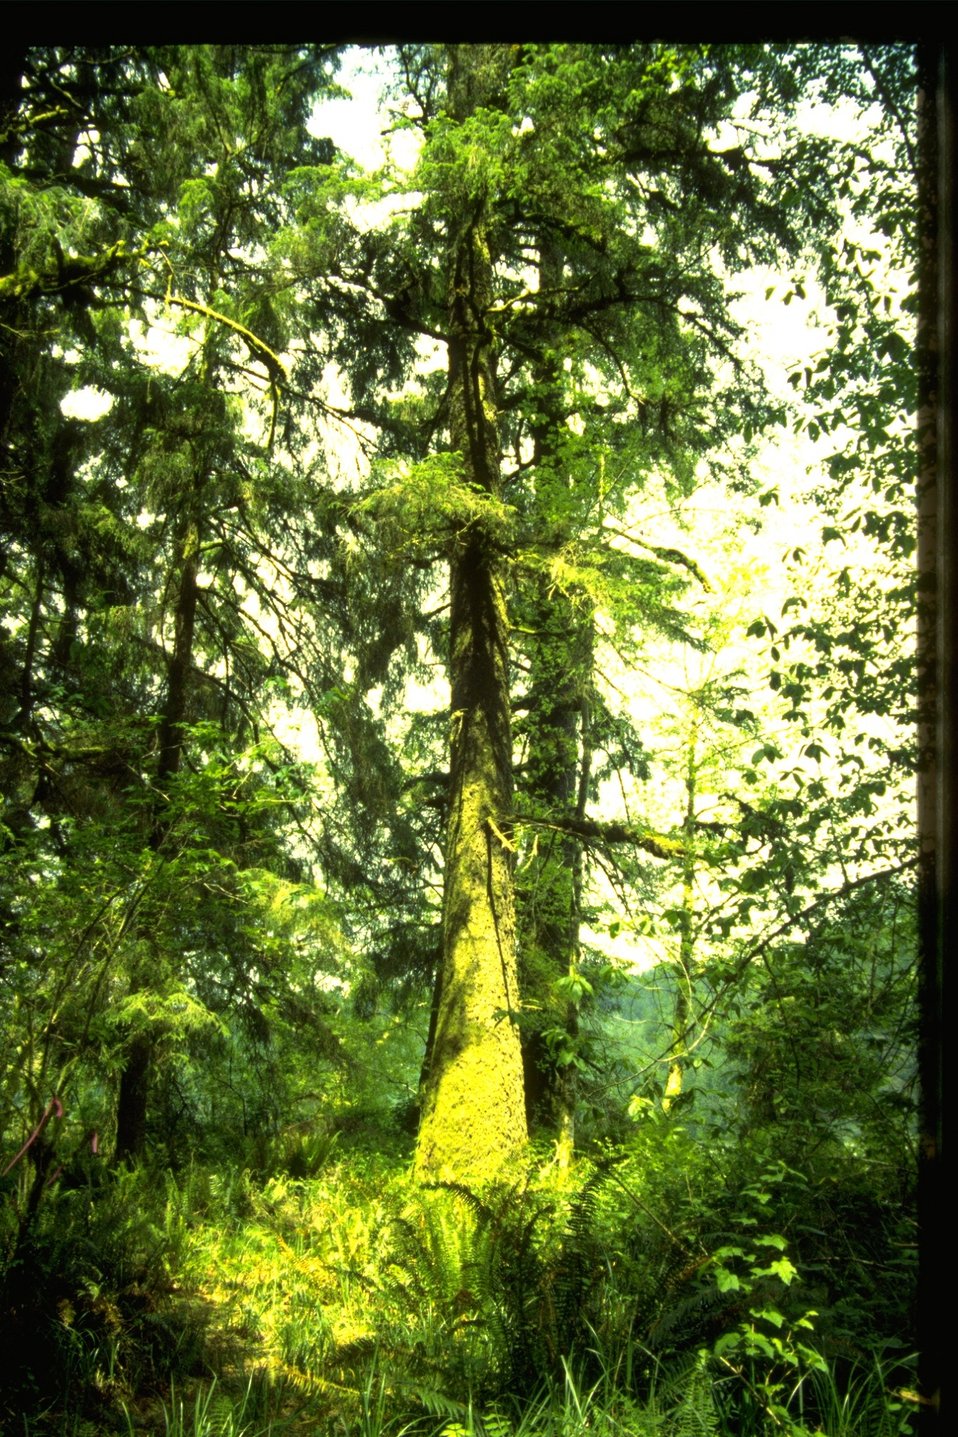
Tree at Spruce Reach Island.